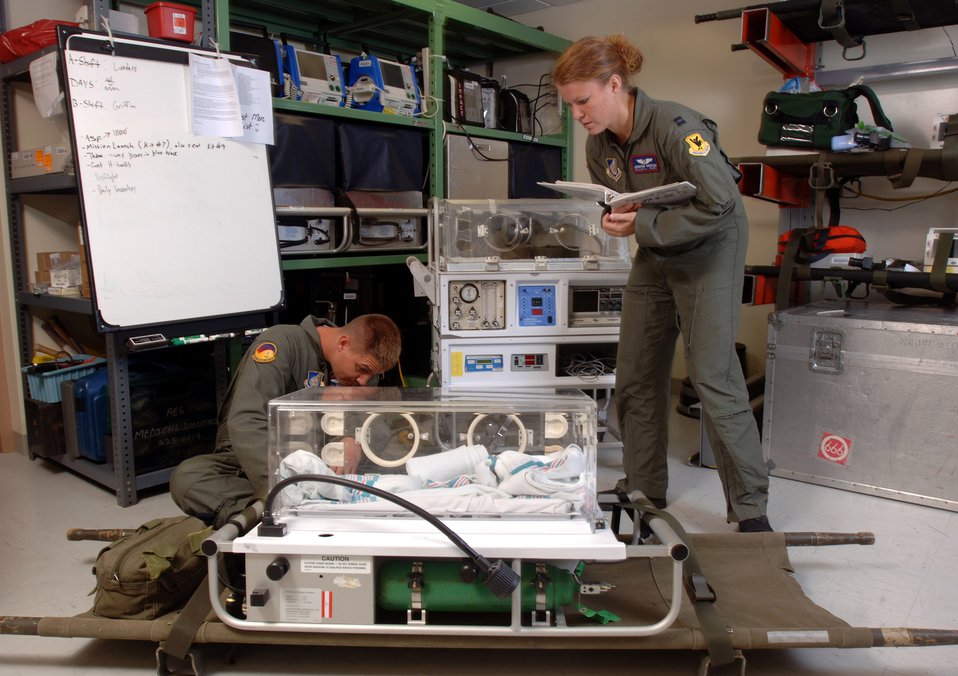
Kadena medics provide lifeline in air

KADENA AIR BASE, Japan -- Staff Sgt. Joe Lueders (left) and Capt. Jennifer Prosser prepare their equipment before a mission here. The mission of the 18th Aeromedical Evacuation Squadron is to provide a flexible, seamless and responsive system capable of prompt and appropriate patient movement. Sergeant Lueders is a technician, and Captain Prosser is a flight nurse.